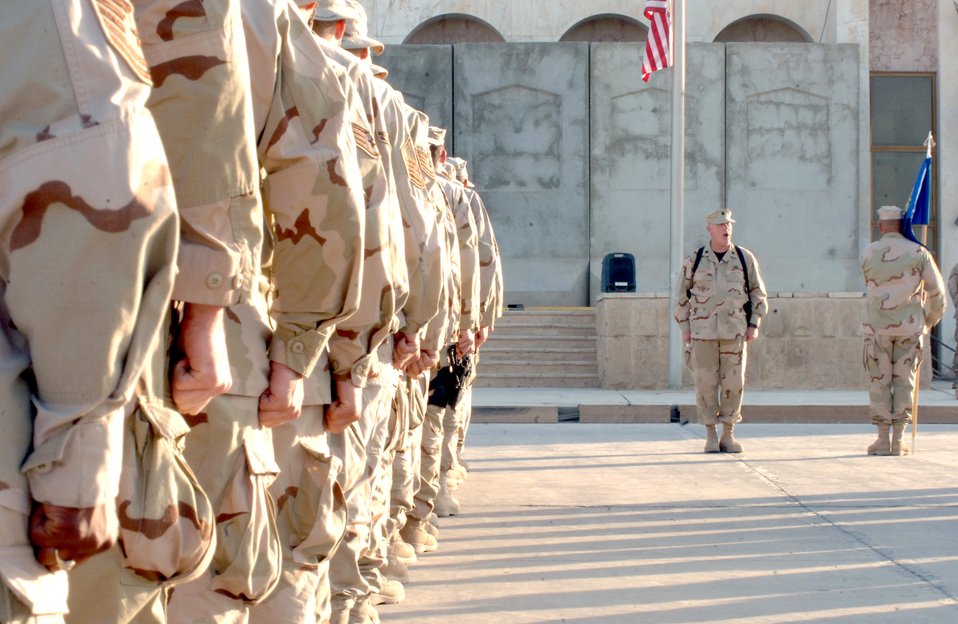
Memorial salute

Lt. Col. John Morris calls his formation to parade rest at a Memorial Day retreat ceremony at Sather Air Base, Iraq, on Monday, May 29, 2006. Colonel Morris, deployed from March Air Reserve Base, Calif., is the 447th Air Expeditionary Group deputy commander. The 447th AEG operates the primary aerial port for transient military aircraft entering and exiting Iraq. The base is named in honor of Staff Sgt. Scott Sather, a Clio, Mich., native who was killed in combat in Iraq on April 8, 2003.